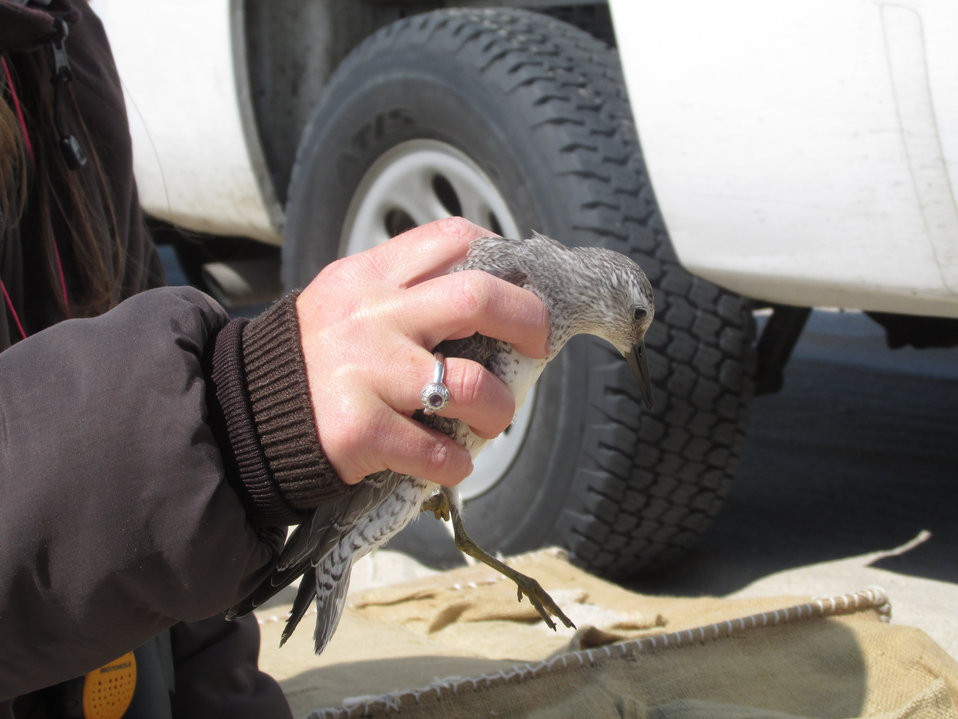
Red knot cannon netting in Cape Cod

Biologist Stephanie Koch holds a red knot.